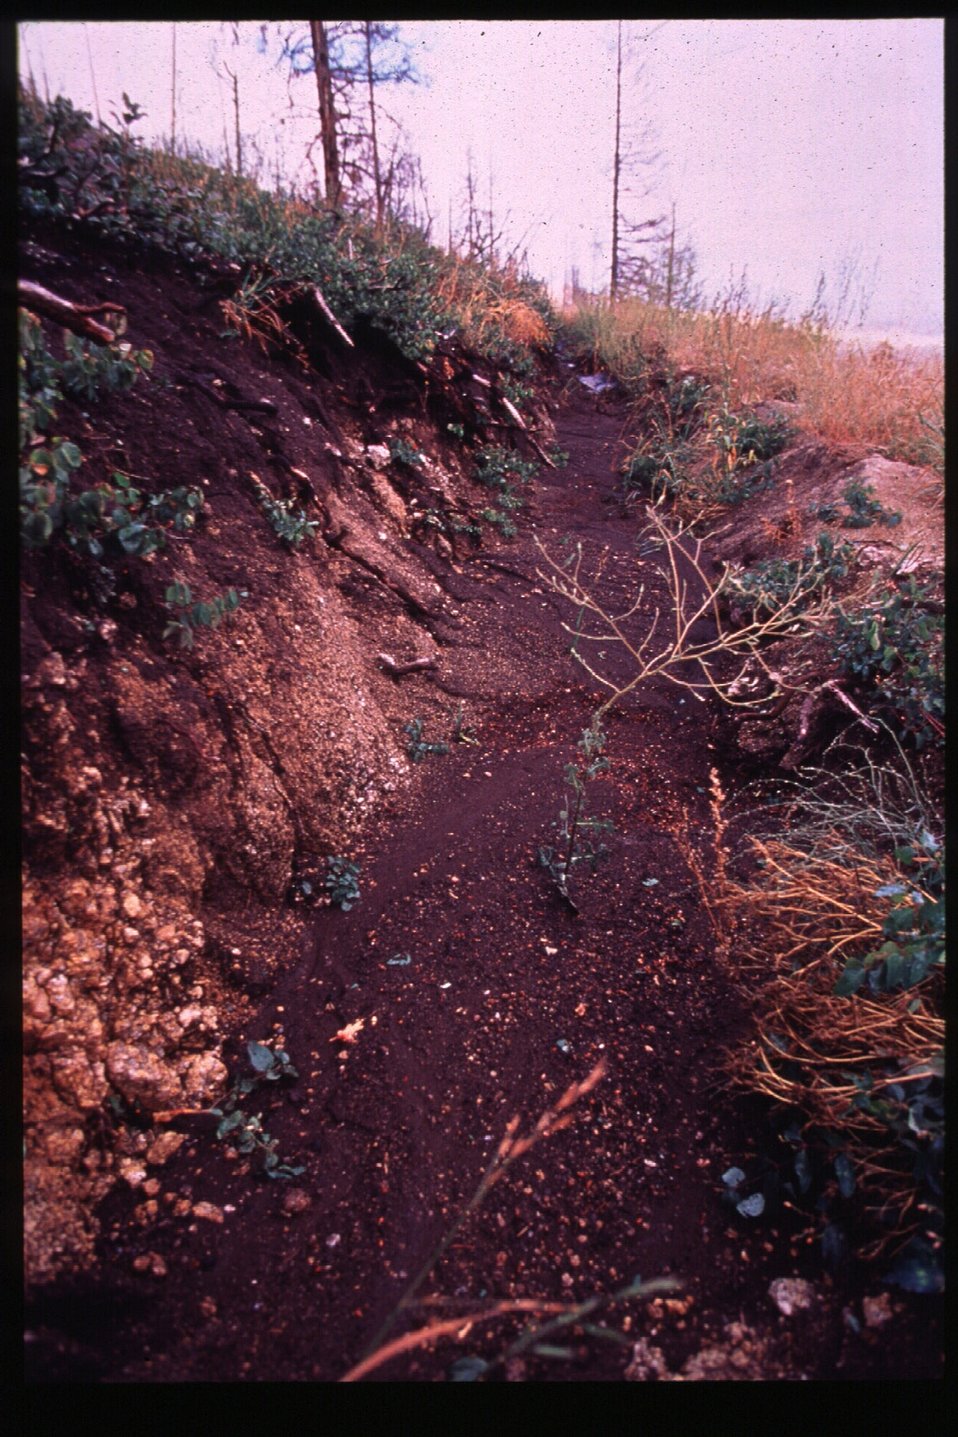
8th Street Fire Four Rivers Field Office LSRD Lower Snake River District